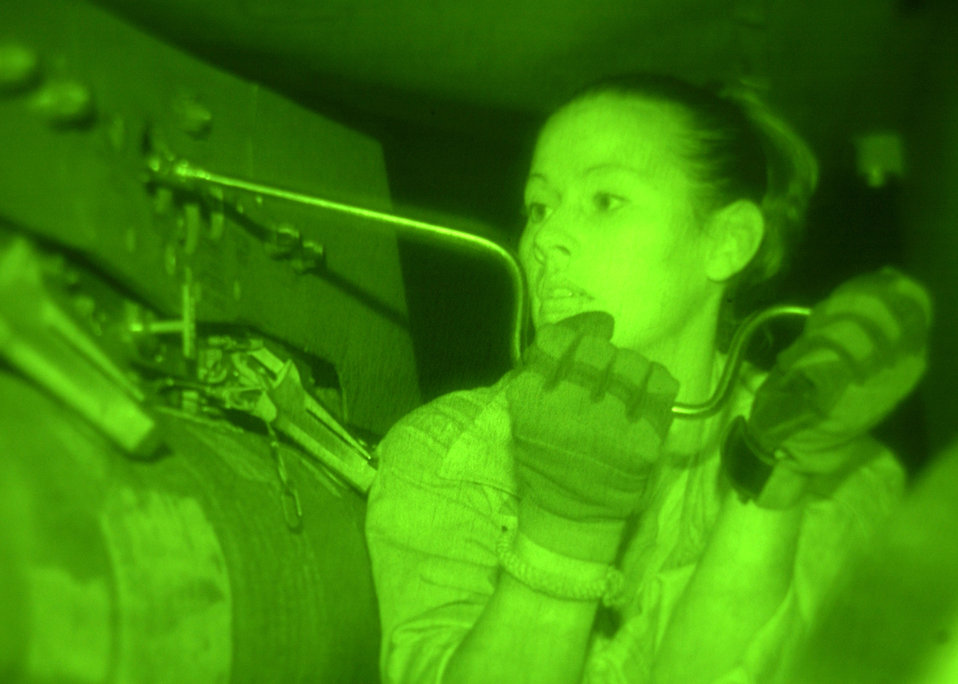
Night Owl

SOUTHWEST ASIA -- Senior Airman Sara Trent removes the explosive cartridges from a pylon as part of her weapons download post flight inspection. Senior Airman Trent is a weapons loader for the 391st Expeditionary Fighter Squadron.